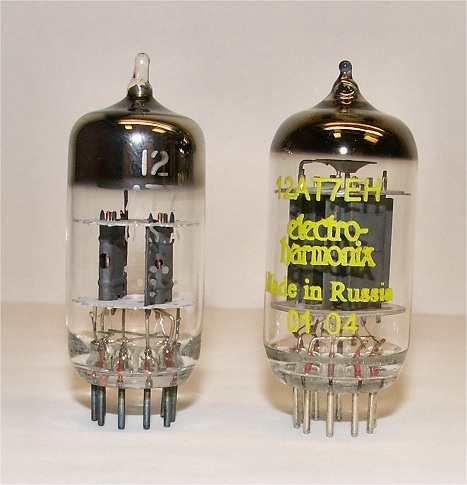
I created this image myself from tubes in my collection.